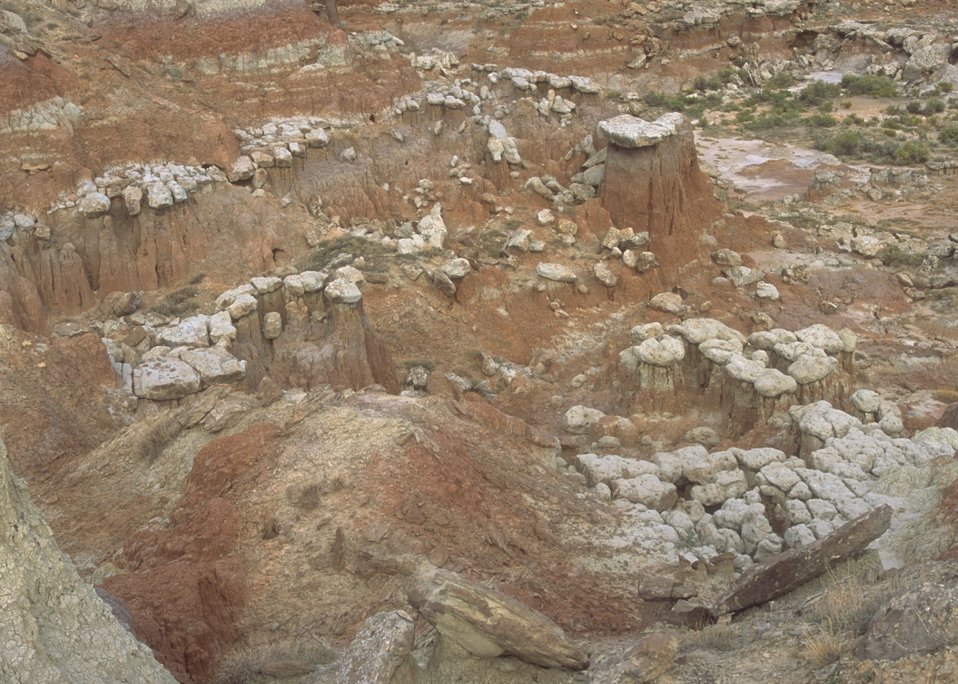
Gooseberry Interpretive Area, Worland Field Office.